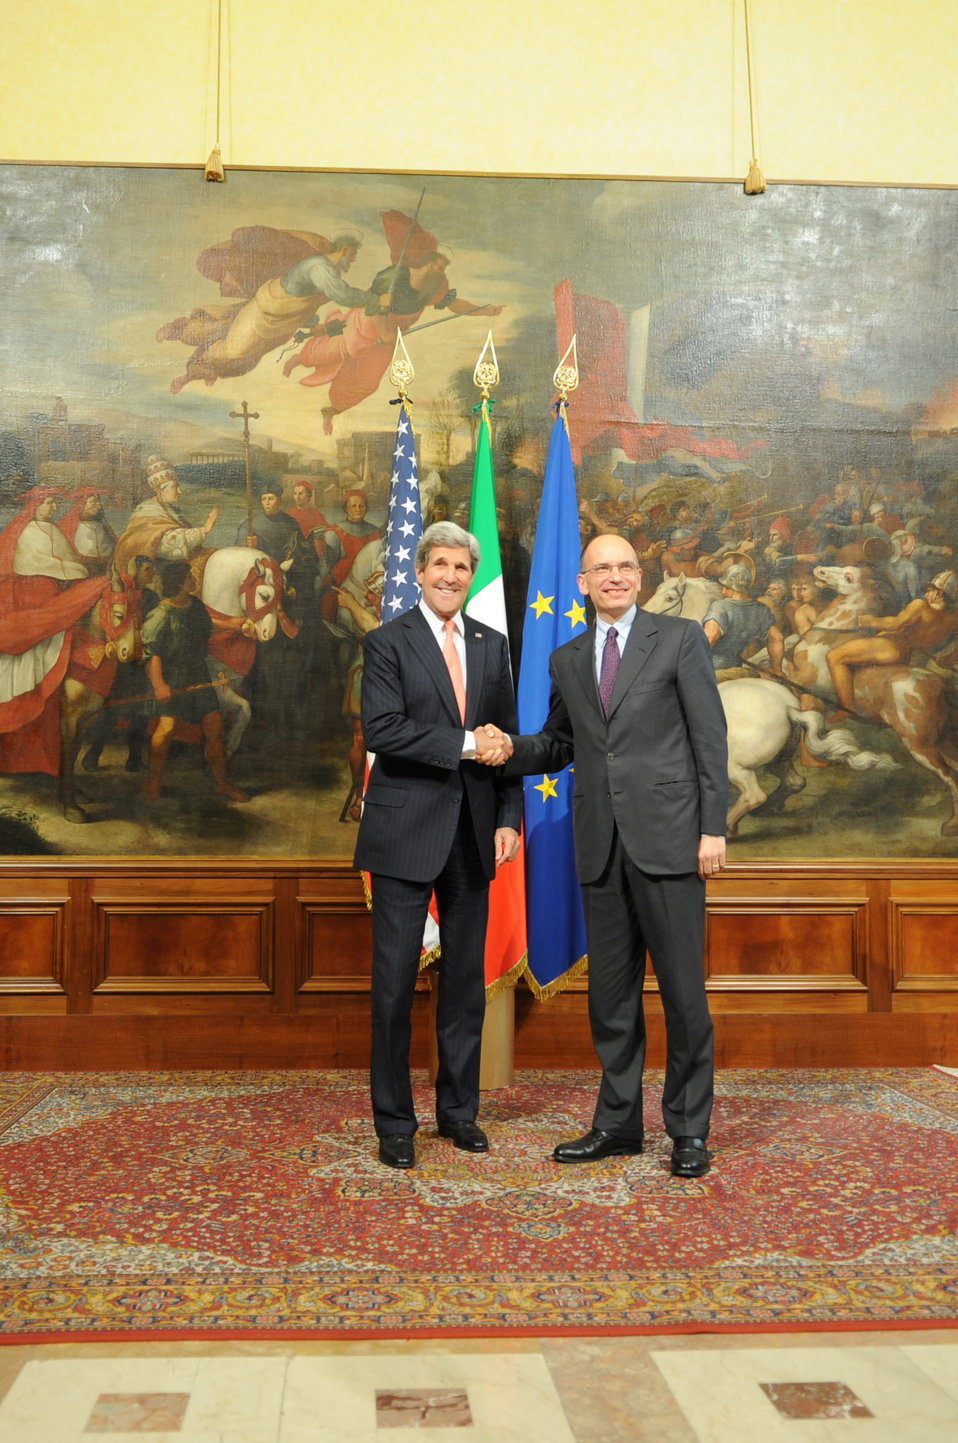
Secretary Kerry Meets With Italian Prime Minister Letta

U.S. Secretary of State John Kerry meets with Italian Prime Minister Enrico Letta on May 9, 2013, at Palazzo Chigi in Rome, Italy.